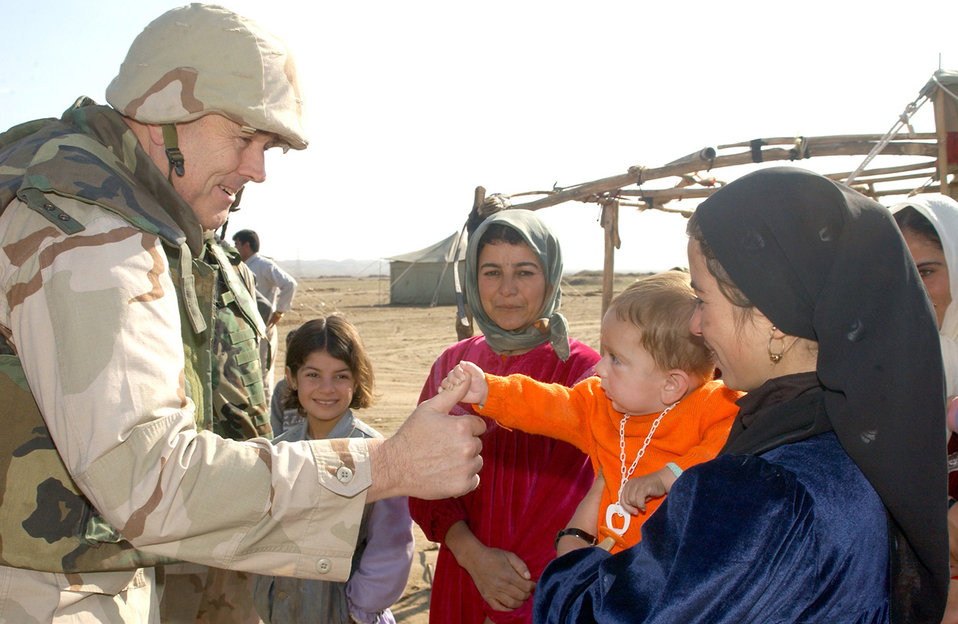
Providing relief

KIRKUK, Iraq -- Chaplain (Lt. Col.) Gary Garvey's thumb is held by a curious infant during a visit to a local village. Airmen and soldiers delivered several loads of donated boxed goods sent from the United States. Chaplain Garvey is assigned to the 506th Air Expeditionary Group.